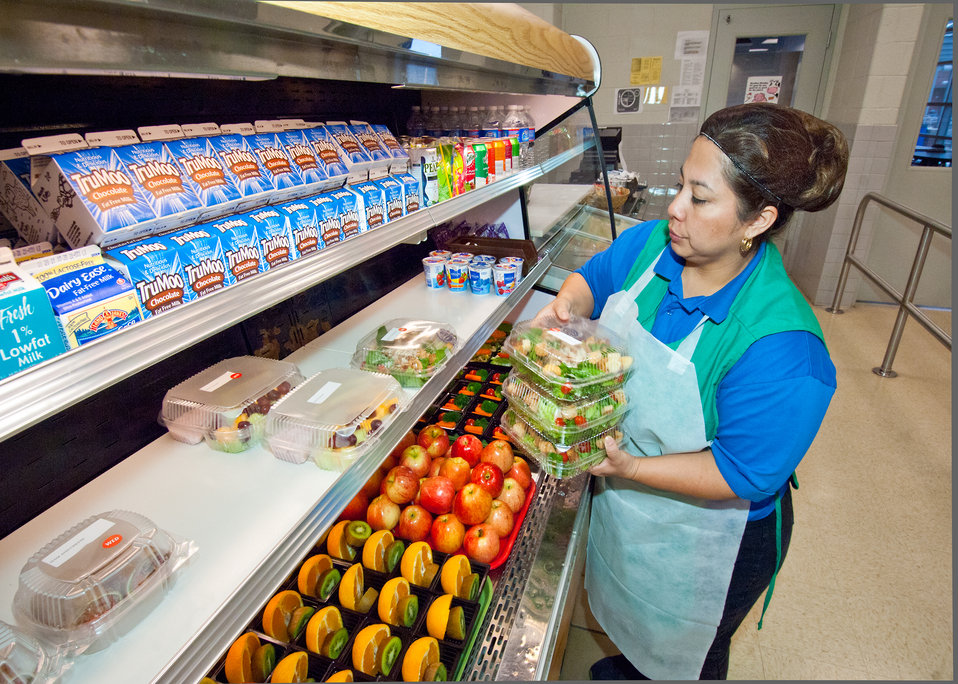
Magaly Valentin, Arlington Food Services places fresh salads for students, the salads are available to students through the National School Lunch Program. at Washington-Lee High School in Arlington, Virginia, on Wednesday, October 19, 2011. The National School Lunch Program is a federally assisted meal program administered by the United States Department of Agriculture, Food and Nutrition Service operating in public, nonprofit private schools and residential child care institutions. It provides nutritionally balanced, low-cost or free lunches to children each school day.